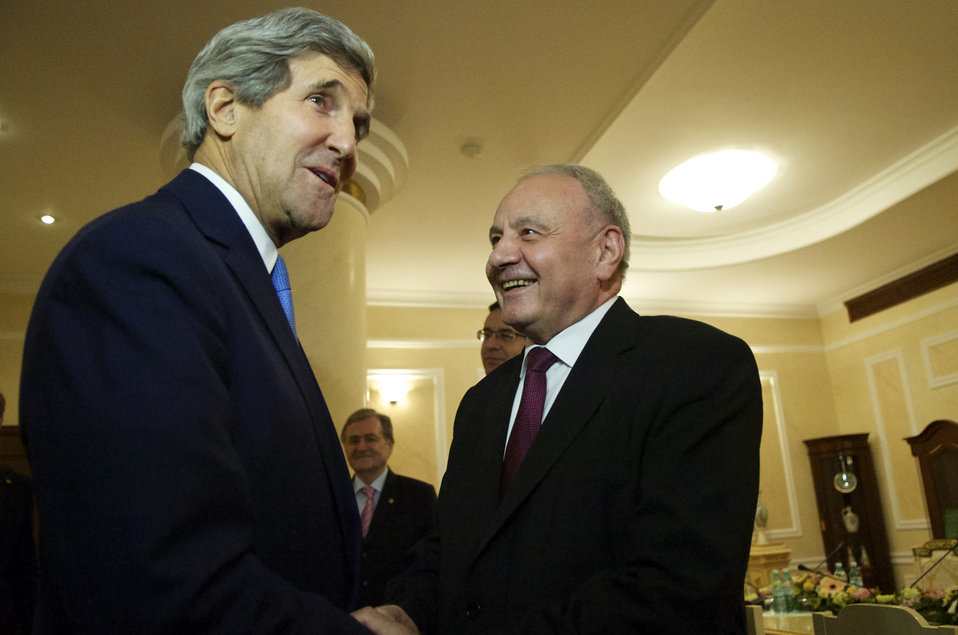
Moldovan President Timofti Welcomes Secretary Kerry to the Presidential Residence

Moldovan President Nicolae Timofti welcomes U.S. Secretary of State John Kerry as he arrives at the Presidential Residence in Chisinau for meetings in Chisinau, Moldova, on December 4, 2013.